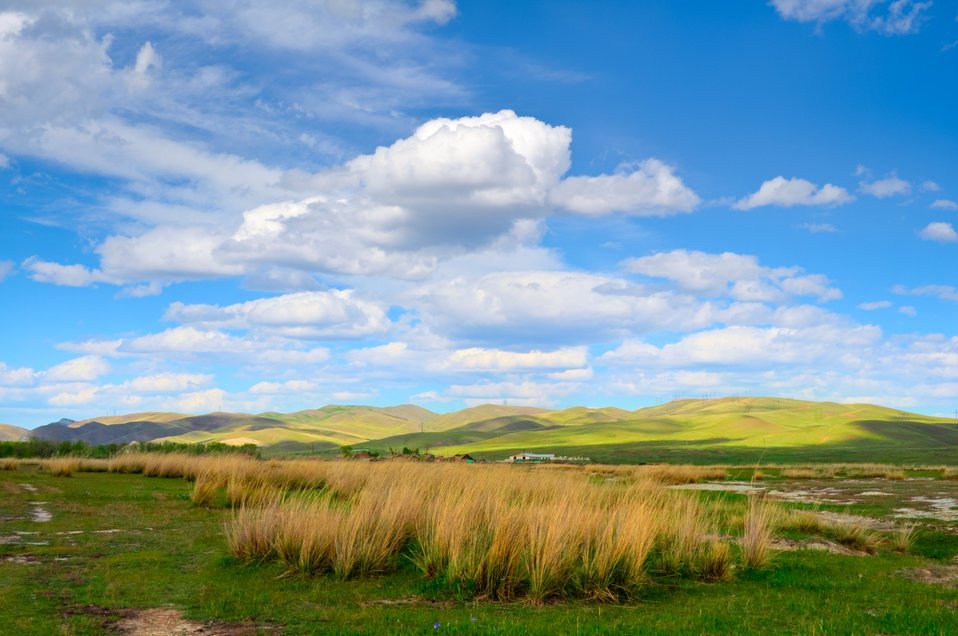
Summer landscape with beautiful sky.